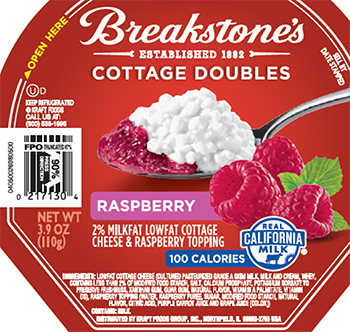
RECALLED – Cottage Cheese products

May 17, 2014 – Product Recall – Kraft Foods Group Voluntarily Recalls Select Cottage Cheese Products Due to Out-of-Standard Storage Temperatures
Certain Knudsen Cottage Cheese, Breakstone’s Cottage Cheese, Simply Kraft Cottage Cheese and Daily Chef Cottage Cheese Products Included in the Recall
.